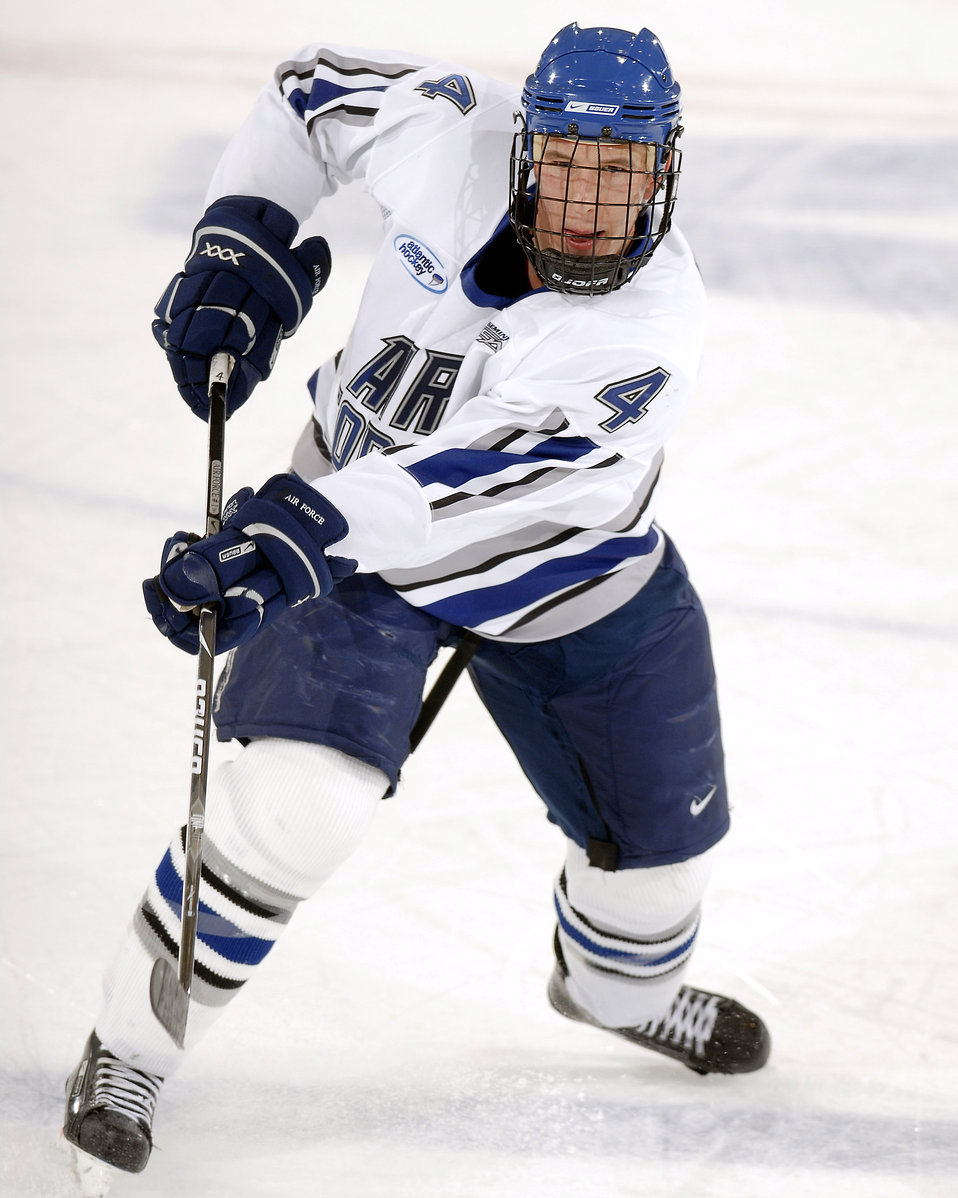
Air Force remains perfect at 8-0

Air Force Academy defenseman Greg Flynn takes a shot as Air Force defeated Bentley College 5-1 in an Atlantic Hockey Association game Oct. 31 at the Academy's Cadet Ice Arena in Colorado Springs, Colo. The next evening, the Academy skaters defeated Bentley 8-2, giving them a perfect 8-0 start, which ties a school record set in 1971-72. Air Force currently is ranked 14th in the nation.